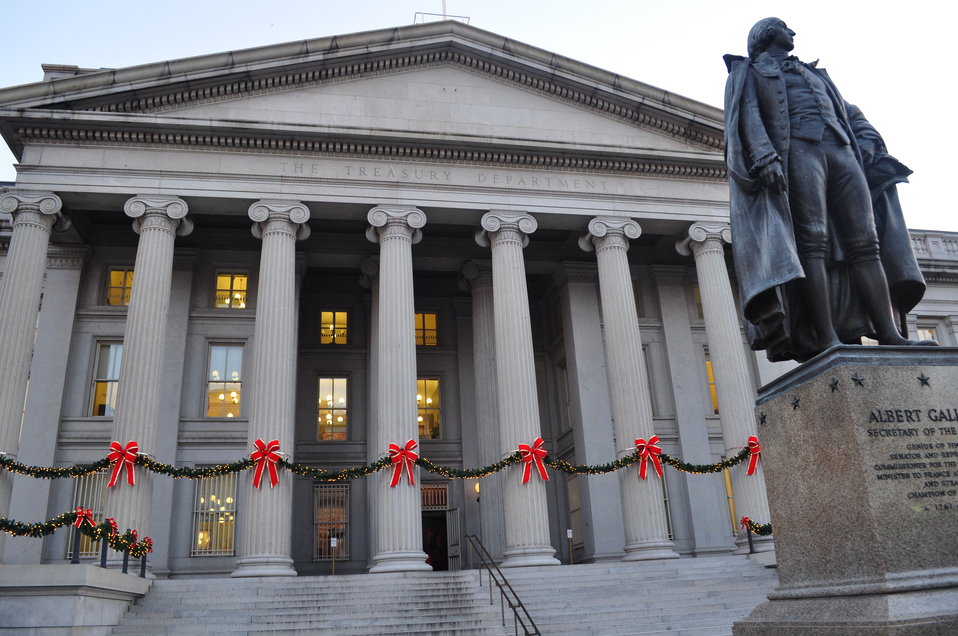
Holidays at the Treasury Department

The U.S. Department of the Treasury building decorated for the holidays.